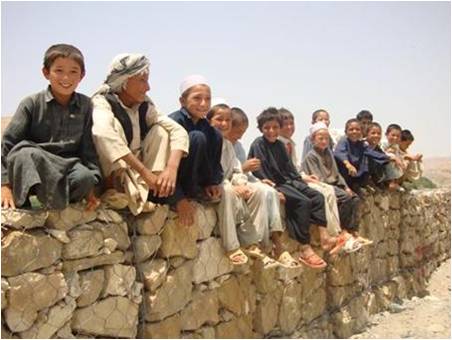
Building Walls Helps Break Down Walls